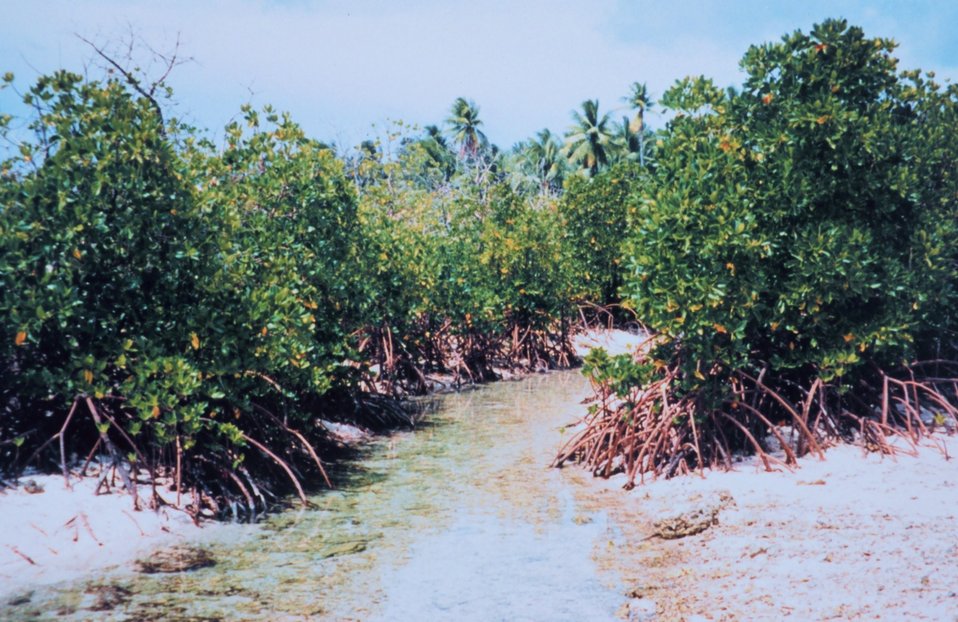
Mangroves along a tidal stream